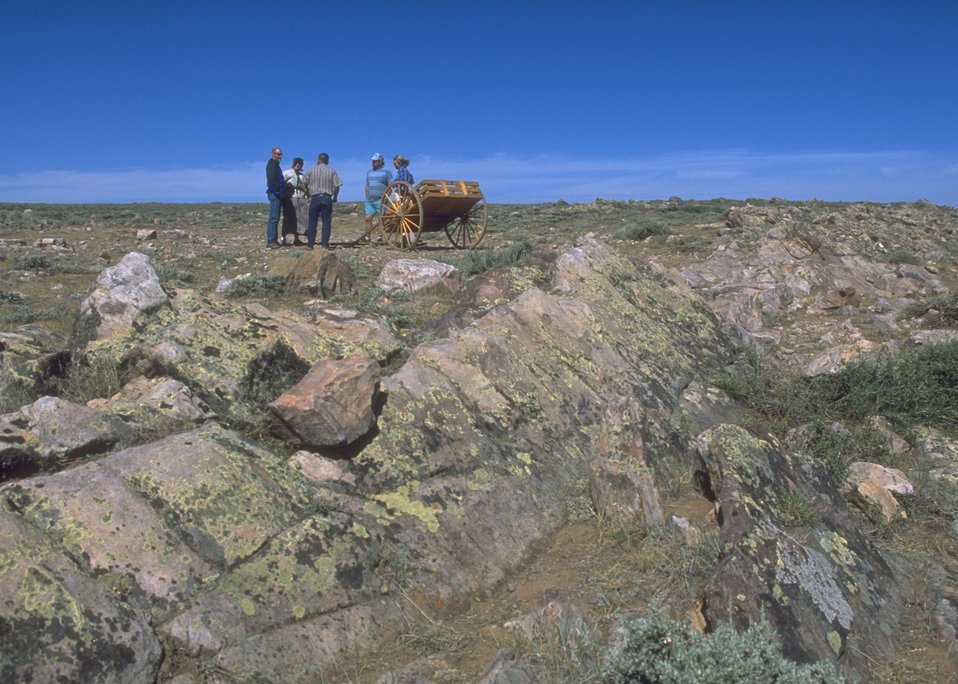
Hand cart re-enactment along the Mormon Trail, Lander Field Office.